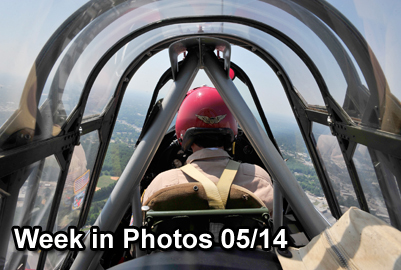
Week in Photos

Air Force Week in Photos for May 14, 2010, highlights photos from around the Air Force. In this photo by Staff Sgt. Patrick Mitchell, an over-the-shoulder view of a pilot flying a T-6 Texan during ShawFest 2010 May 7, 2010, over Shaw Air Force Base, S. C.